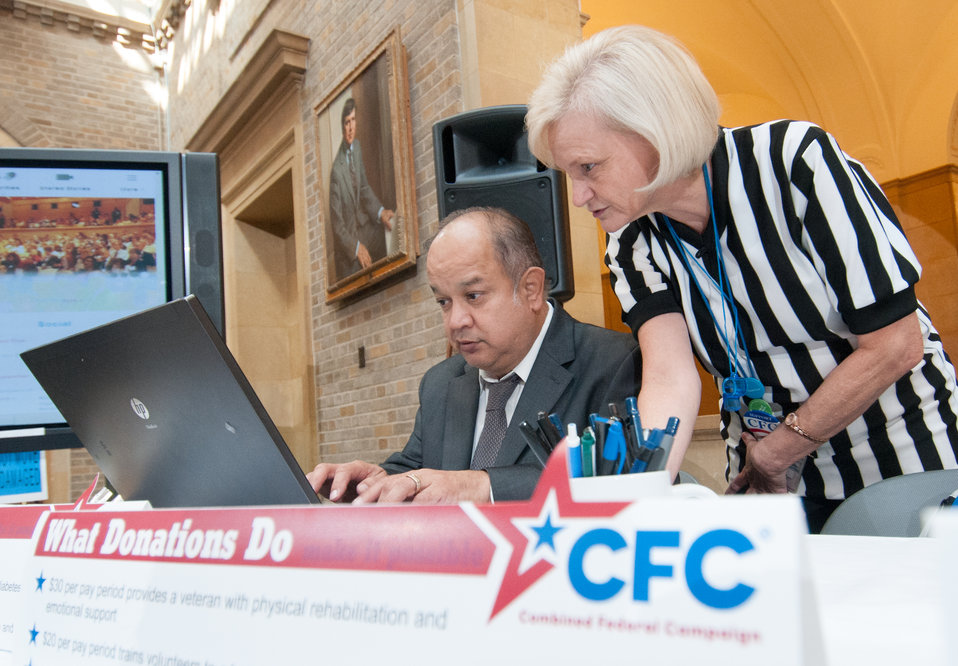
Barbara Boyd, right, assists Richard Fierroz, register in the eGiving system, during the 2013 Combined Federal Campaign Opening Ceremony and fund raising event on Tuesday, Sept 17, 2013 in the Whitten Building, U.S. Department of Agriculture (USDA), Washington, D.C. Employees took personal time to attend the fund raising activities that generated donations and that will help support charities. The Combined Federal Campaign (CFC) is the largest and most successful workplace charitable giving drive in the world. CFC is the only authorized charitable organization solicitation of Federal employees in their workplaces. CFC is structured to support and to promote philanthropy through a voluntary program that is cost-efficient and effective in providing all Federal employees the opportunity to impact the CFC charitable interest of their choosing. For more information about CFC, please see www.usda.gov/wps/portal/usda/usdahome USDA Photo by Lance Cheung.